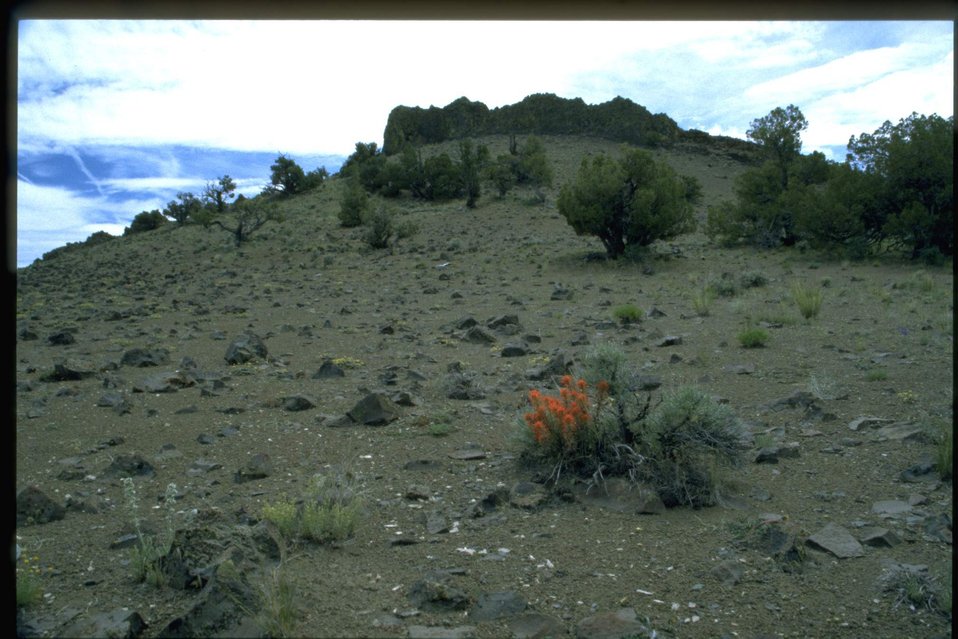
Far shot of Indian Paintbrush habitat.